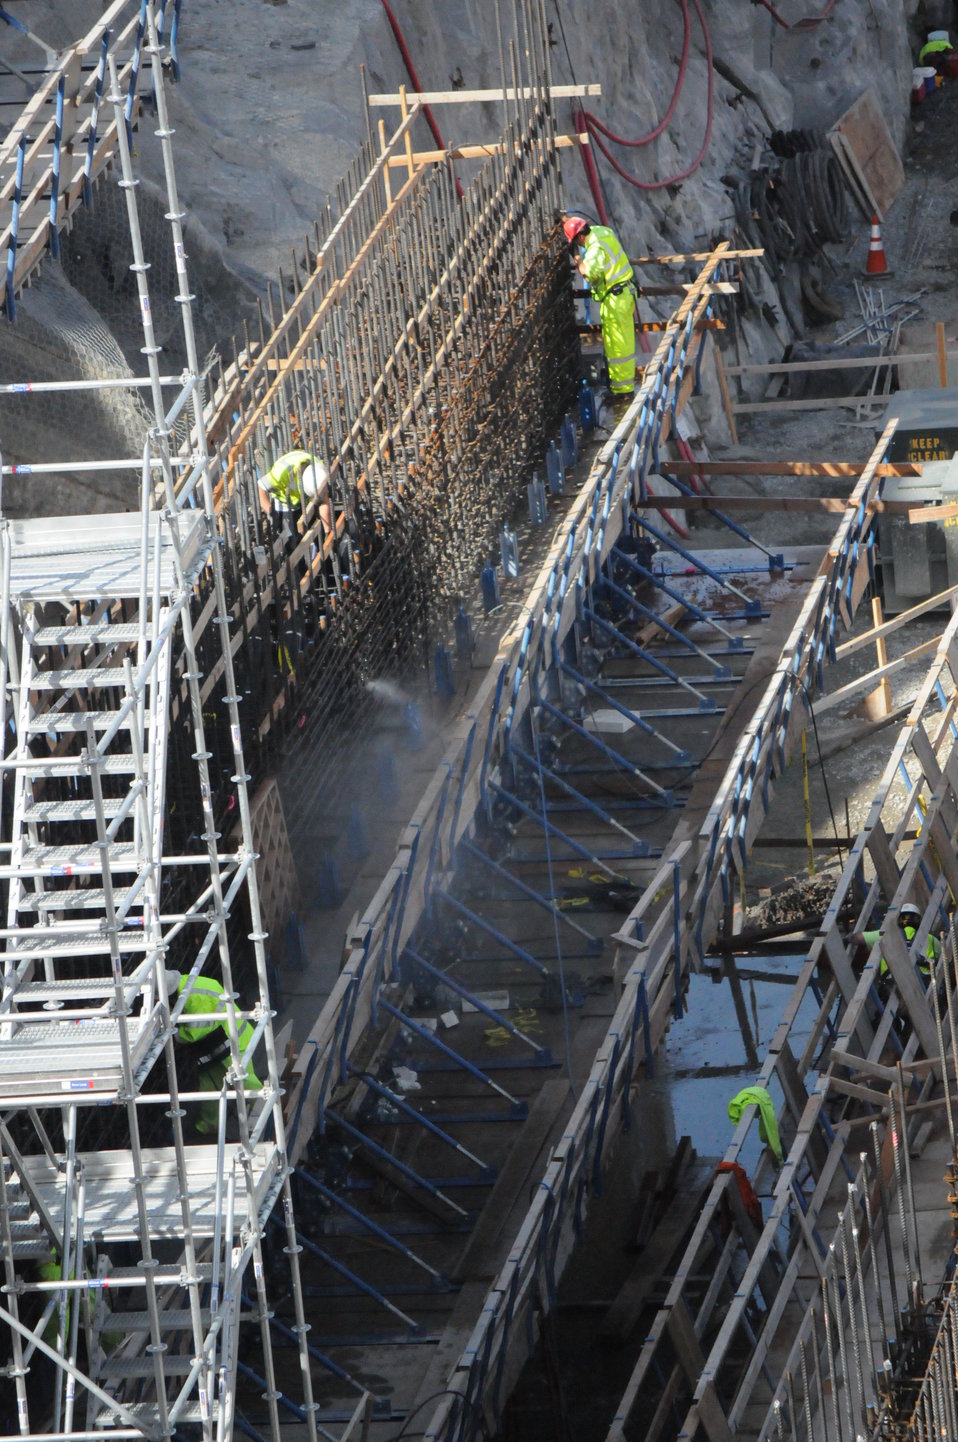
Placing Steel Rebar

Contractors working for the Sacramento District construct the support system for the rising Folsom Dam auxiliary spillway on March 14. The control structure—essentially a second dam—will stand as tall as the Statue of Liberty upon completion, estimated in October 2017, and will help reduce the risk of flooding in the Sacramento region.